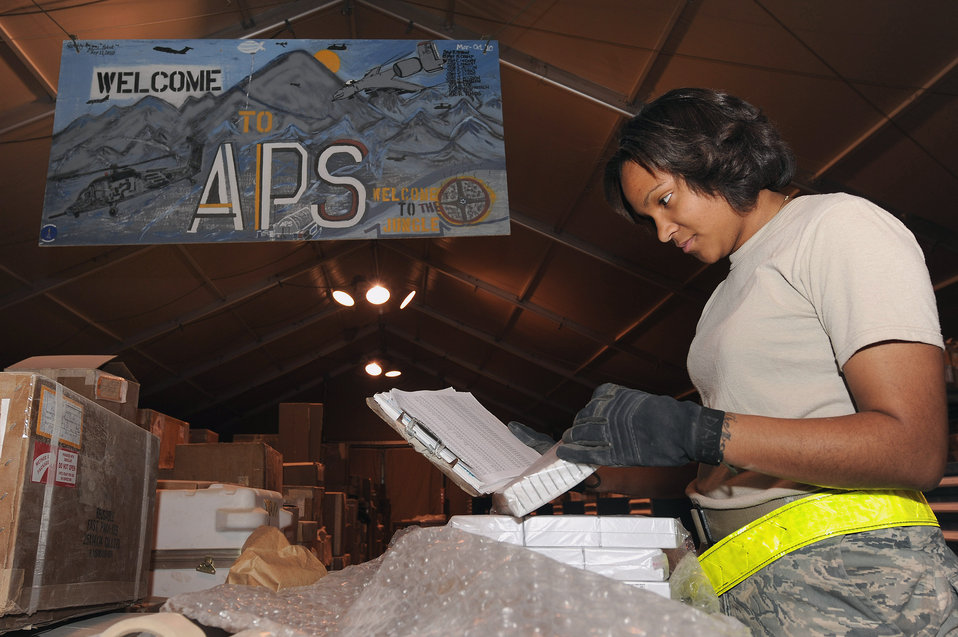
KAF APS

Senior Airman Nasha Franklin conducts an inventory on aircraft parts Dec. 16, 2010, at Kandahar Airfield, Afghanistan. The 451st Expeditionary Logistics Readiness Squadron Aircraft Parts Store supports 11 aircraft maintenance units with an inventory of more than 250,000 parts valued at $19 million. Airman Franklin is a material management journeyman assigned to the 451st ELRS.